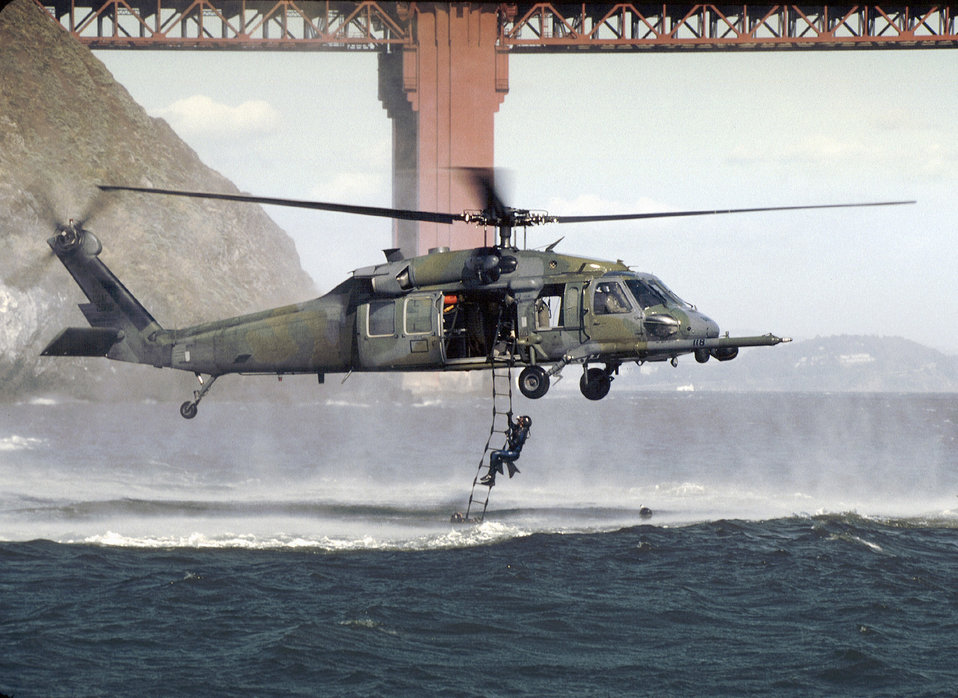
Pararescuemen climb up a moving HH-60G Pave Hawk

California Air National Guard pararescuemen of the 129th Rescue Wing, Moffett Federal Airfield, Ca. climb up a moving rope ladder, from the chilly waters outside the Golden Gate Bridge, up to a HH-60G Pave Hawk. Tech. Sgt. Mike Sampognaro, flight engineer, monitors the training mission from the troop door. Hovering only six feet above the waves, Lt. Col. Thomas Laut must fly with extreme care as he deals with gusting winds, sea spray, sun glare, and sea swells, as he maintains a